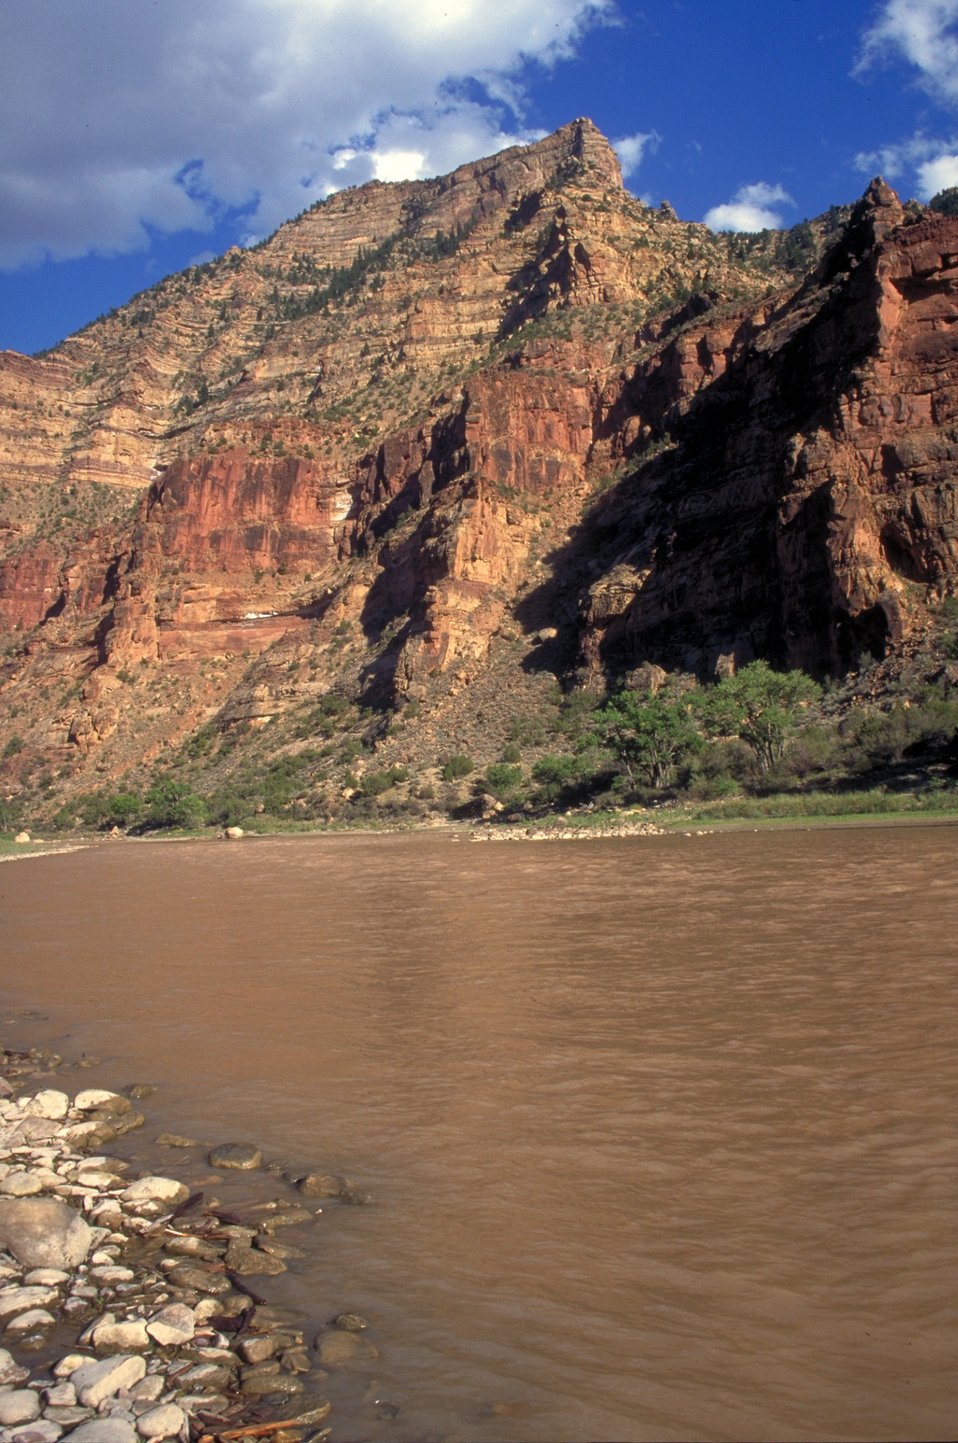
Desolation/Gray Canyons near Price, Utah.